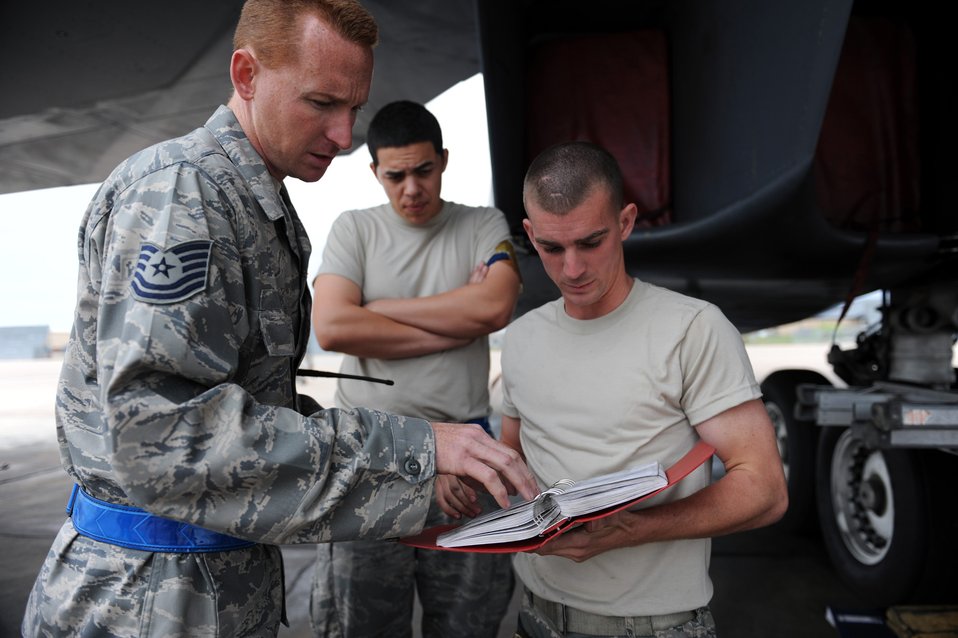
B-1 adapts, remains effective for 25 years

Tech. Sgt. Jeffrey Hicks (left) shows Staff. Sgt. Christopher Blackwell and Airman 1st Class Antonio Herrera (background) a procedural step from the technical manual April 15, 2010, on the Dyess Air Force Base, Texas, flightline. Even though the mission of the B-1 Lancer has changed, the maintenance remains the same.